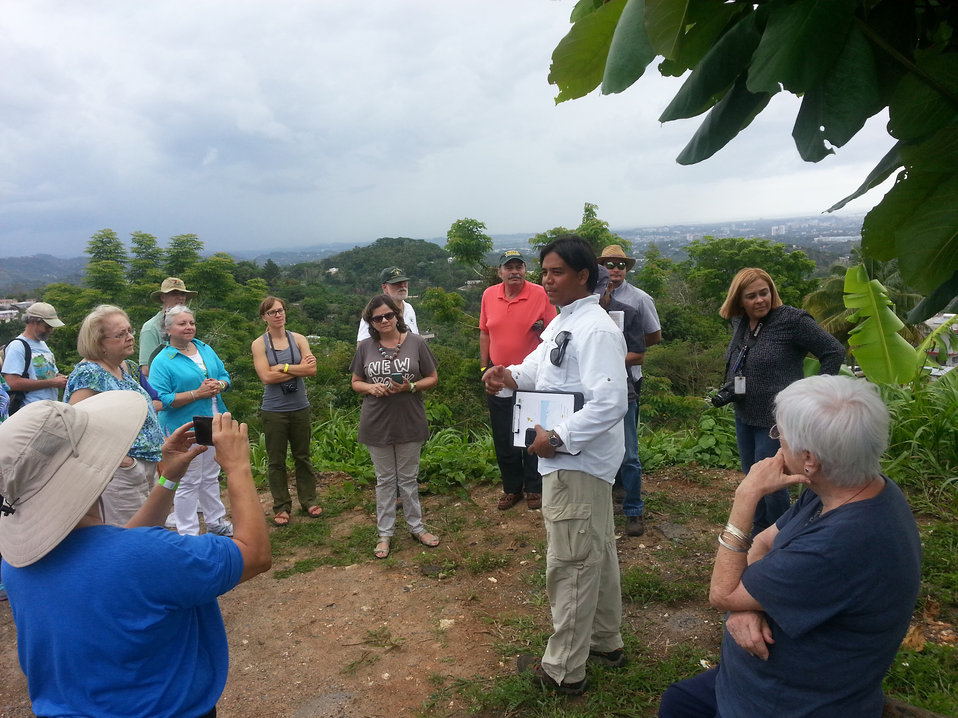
IITF5

Para la Naturaleza collaborator Ray Rodriguez talks about the rural-urban ecotone and positive outcomes of community action as participants enjoy a birds-eye view overlooking the Río Piedras River Watershed boundaries in the San Juan metropolitan area on May 20, 2014. This was the final stop of an urban field trip held as part of the Institute’s 75th anniversary celebration.